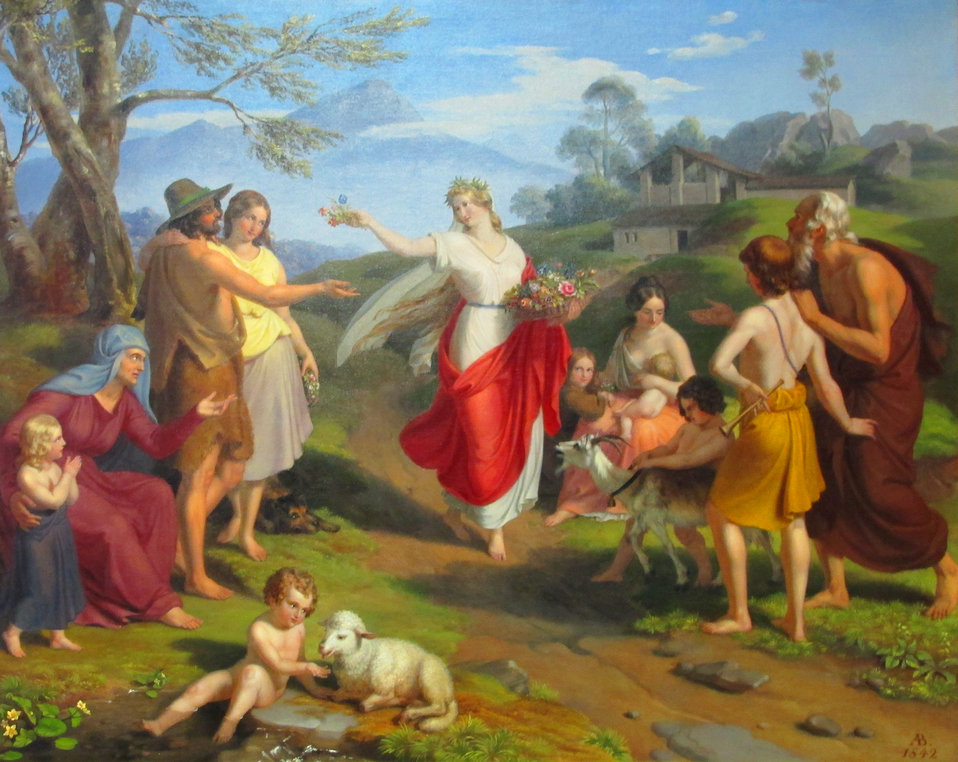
Deutsch: Allegorie des Frühlings. Öl/Leinwand (doubliert), 69 × 89,5 cm